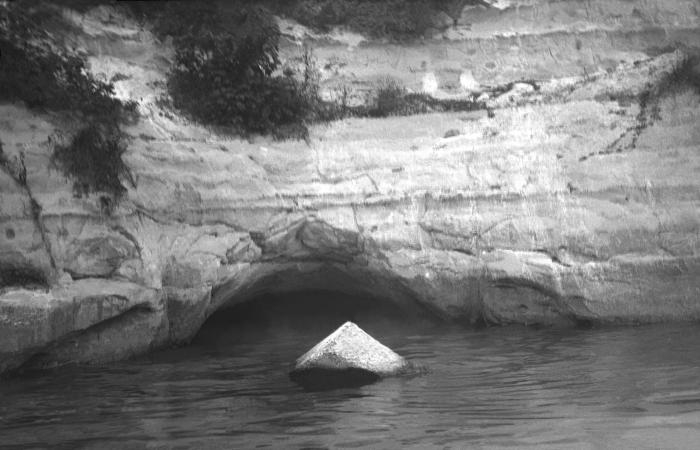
This historic 1919 photograph revealed a sewer outlet that drained its contents into the Mississippi River that had originated from Minneapolis, Minnesota.